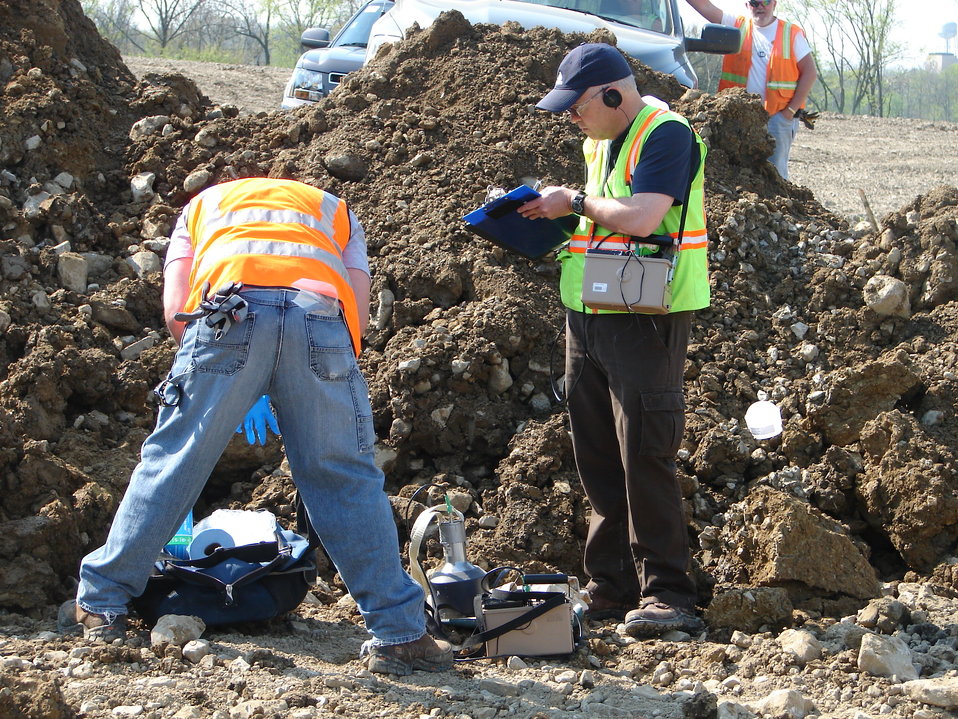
Recovery Act Project Brings End to Mound Site Cleanup Activities

The Recovery Act invested $17.9 million in the completion of EM’s legacy cleanup activities at the Mound Site in 2010.
Recovery Act workers disposed nearly 20,000 cubic meters of soil and demolition debris in the cleanup, which focused on the Operable Unit-1, a former mixed-waste landfill at the 306-acre site. The Recovery Act cleanup was the final remediation project at Mound.
The federal government is in the process of transferring ownership of the site to the Mound Development Corporation, a community reuse organization.